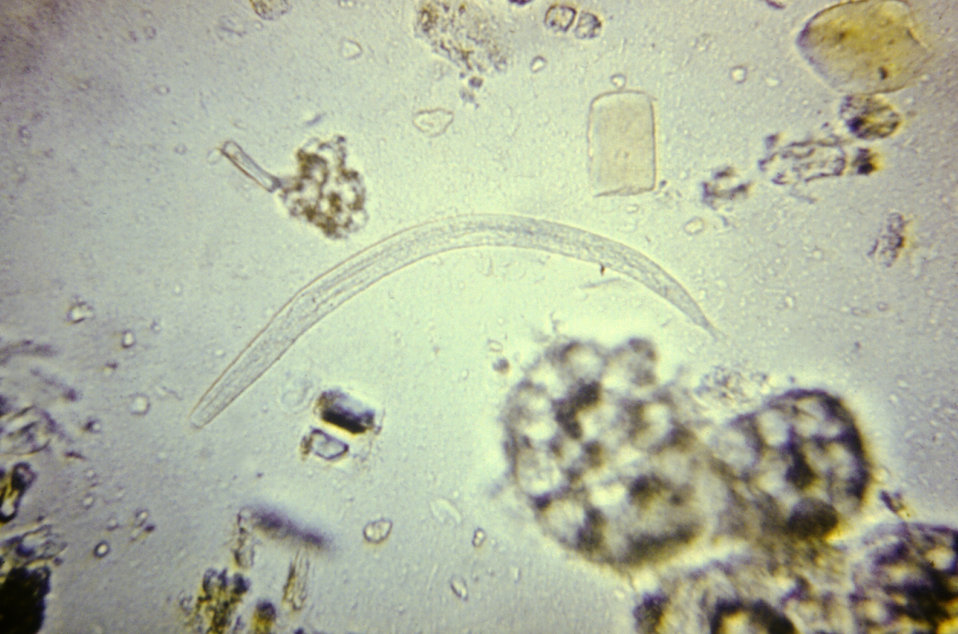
This micrograph depicts a rhabditiform, i.e., early noninfectious stage, larva of a parasitic Strongyloides sp. nematode.